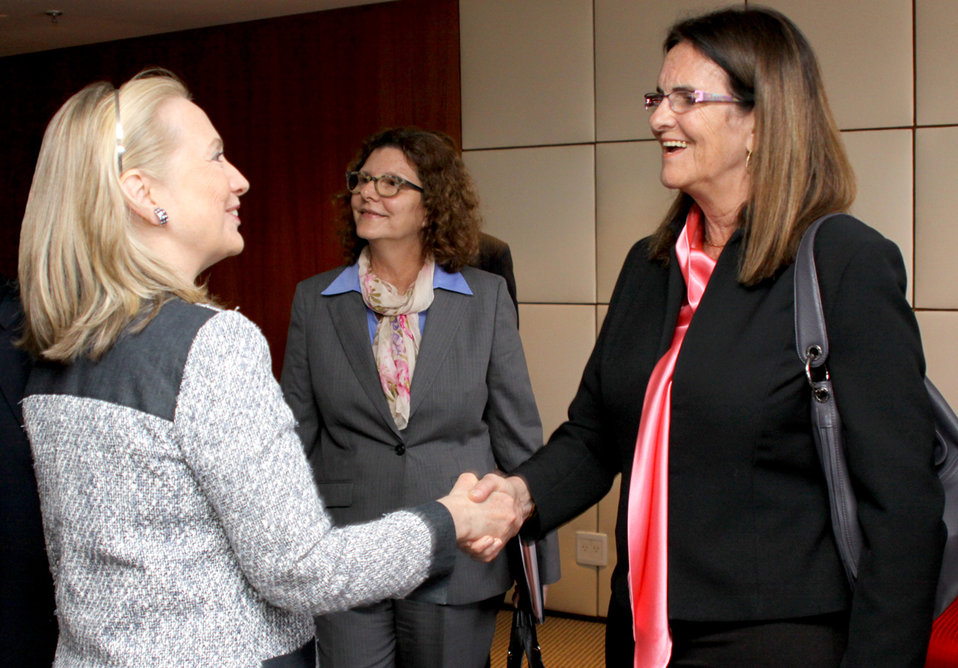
Secretary Clinton Meets With Petrobras CEO Graças Foster

U.S. Secretary of State Hillary Rodham Clinton meets with Petrobras CEO Maria das Graças Foster in Brasilia, Brazil, on April 16, 2012.